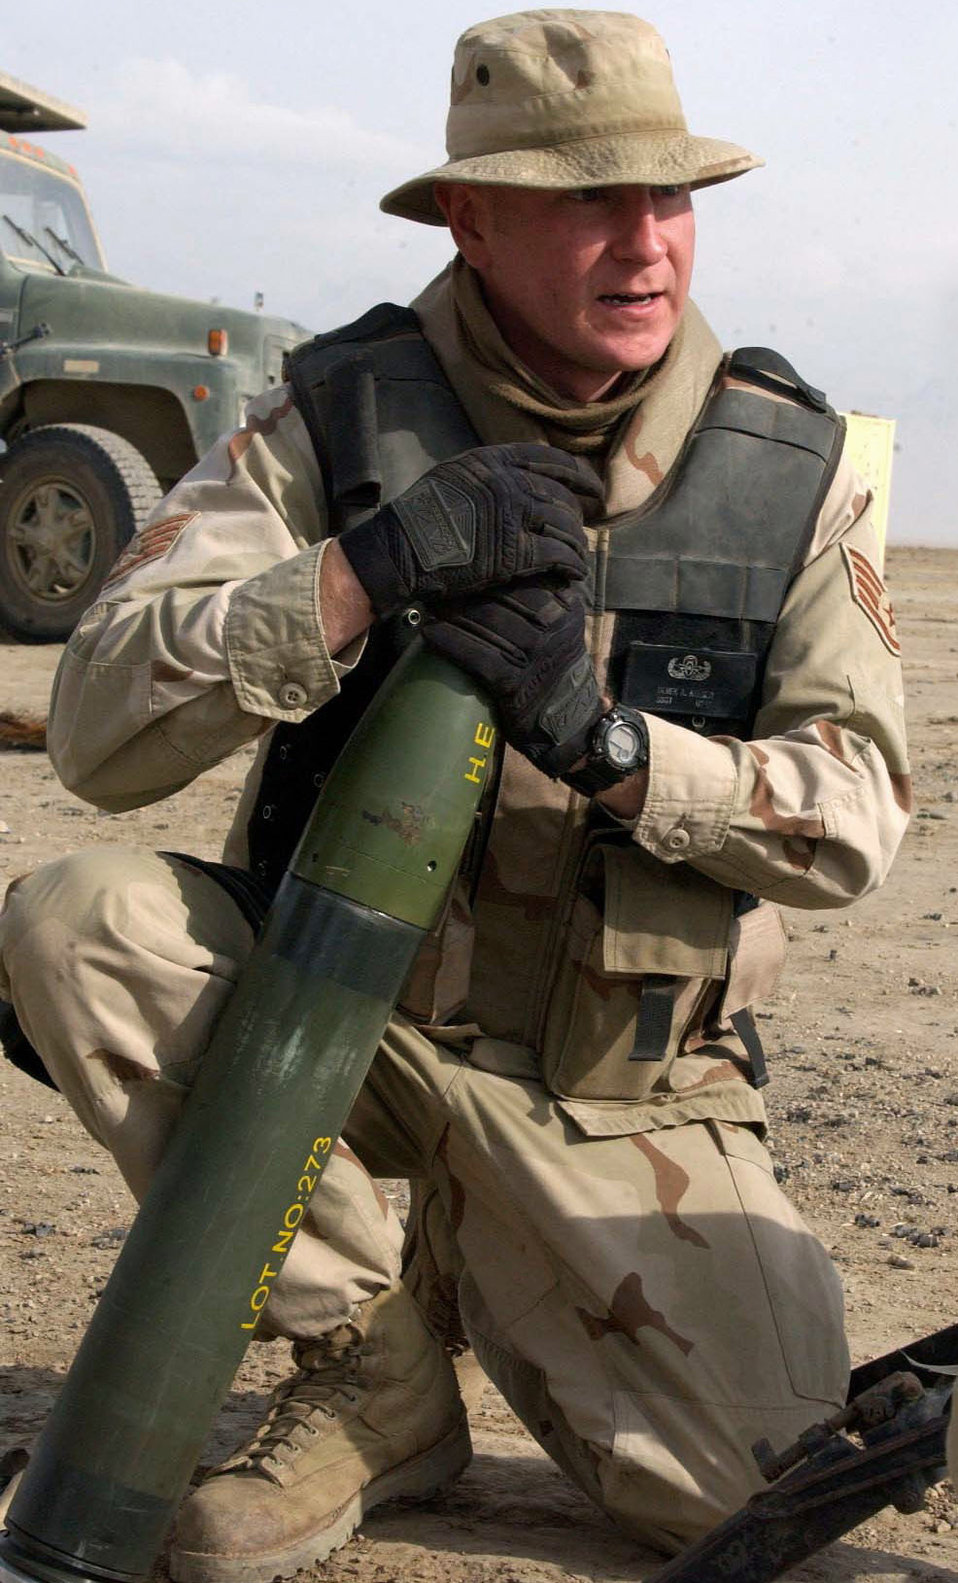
The destroyer

BAGRAM AIR BASE, Afghanistan -- Staff Sgt. Derek Keener readies a 105mm rocket in preparation to destroy a weapons cache near here Dec, 2. Sergeant Keener is assigned to the 455th Explosive Ordnance Group.